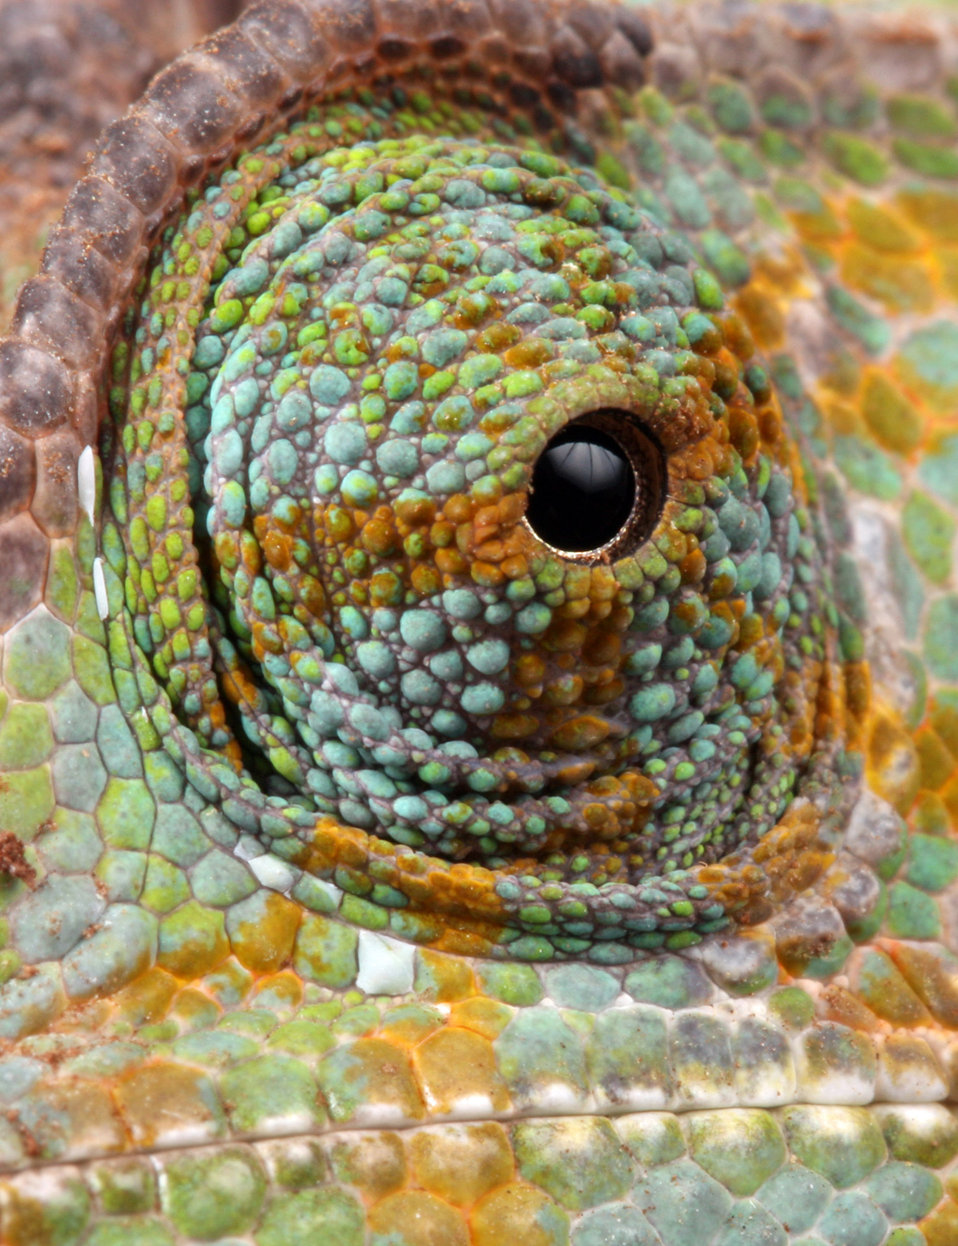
Chameleon eye macro

Close-up macro of the eye of a chameleon.